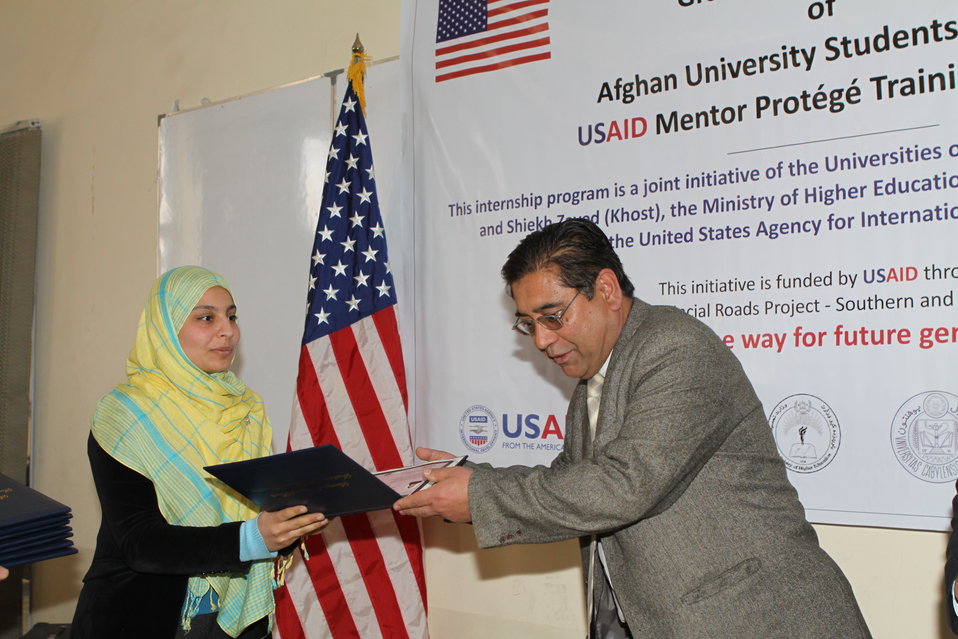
Female University Students Complete Internship

Kabul, Afghanistan | March 16, 2011 – In response to a demand for qualified Afghan engineers, Kabul University celebrated completion of an intensive five-month Mentor Protégé Training Program today by 10 female fourth year university students. The Training Program is a joint effort between the Government of the Islamic Republic of Afghanistan, the U.S. Agency for International Development (USAID), and the Universities of Kabul, Kandahar, Alberoony in Kapisa, Shiekh Zayed in Khost. The graduation ceremony highlighted collaboration with these national institutions in building the technical skills of young Afghans, made possible by USAID.

Four of the interns are engineers, while the remaining six are from the faculties of computer science, economics, and psychology.

Speaking about the event, H.E. Minister of Public Works Abdul Qudus Hamidi said, “The future of Afghanistan lies in developing the skills of our youth, and the engineering skills of these graduates today represent a small but important step forward for the country.”

Keynote speakers at the ceremony included H.E. Deputy Minister of Higher Education Abdul Rahim; USAID Senior Deputy Mission Director Robert Hellyer; and Chancellor of Kabul University Professor Hamidullah Amin. Approximately 150 people, including current and former students attended the graduation.

Launched last year, the Mentor Protégé Training Program has provided qualifying students the opportunity to intern with USAID’s Strategic Provincial Roads-South and East Afghanistan project and gain practical experience in a real work environment. The goal of the program was to offer interns the opportunity to gain hands-on experience to reinforce their formal studies. A total of 30 students from four national universities have benefitted from this program.

“The promotion of women’s rights is integrated into the overall U.S. Government development strategy and can be found in key programs, including education, healthcare, security, rule of law, political participation, agriculture, and economic development,” said Robert Hellyer. “The U.S. Government is committed to the Afghan leadership of programs that directly enhance development, particularly as it relates to women’s issues.”

This event also highlighted the learning achievements of students and emphasized the importance of hands-on internship programs. The curriculum is designed to instill students with the knowledge and confidence to qualify for engineering positions upon completion of their fourth year at their respective universities.